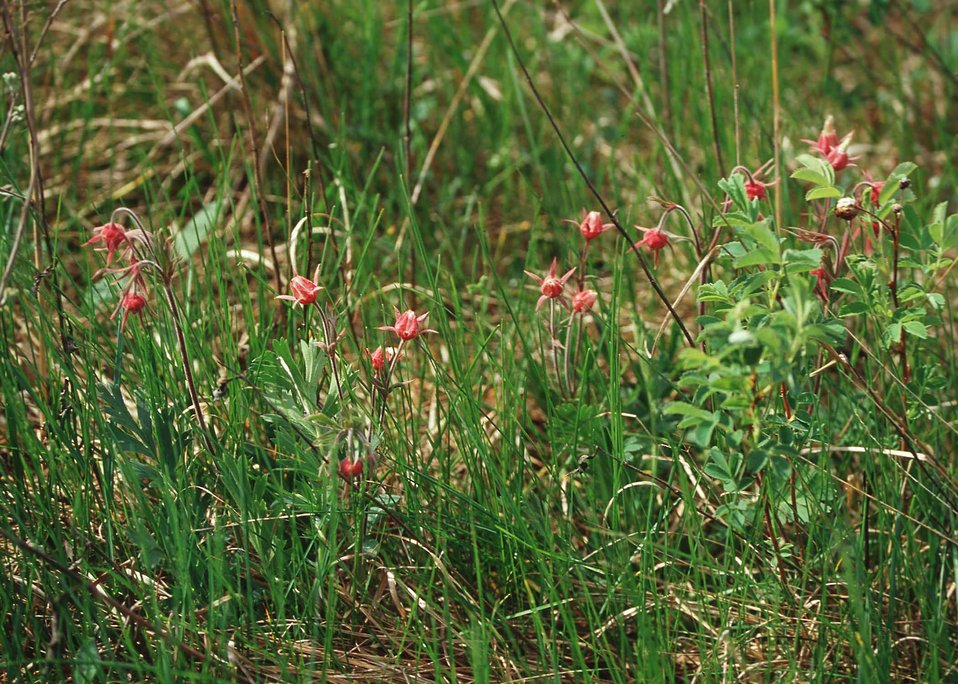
Prairie Smoke.